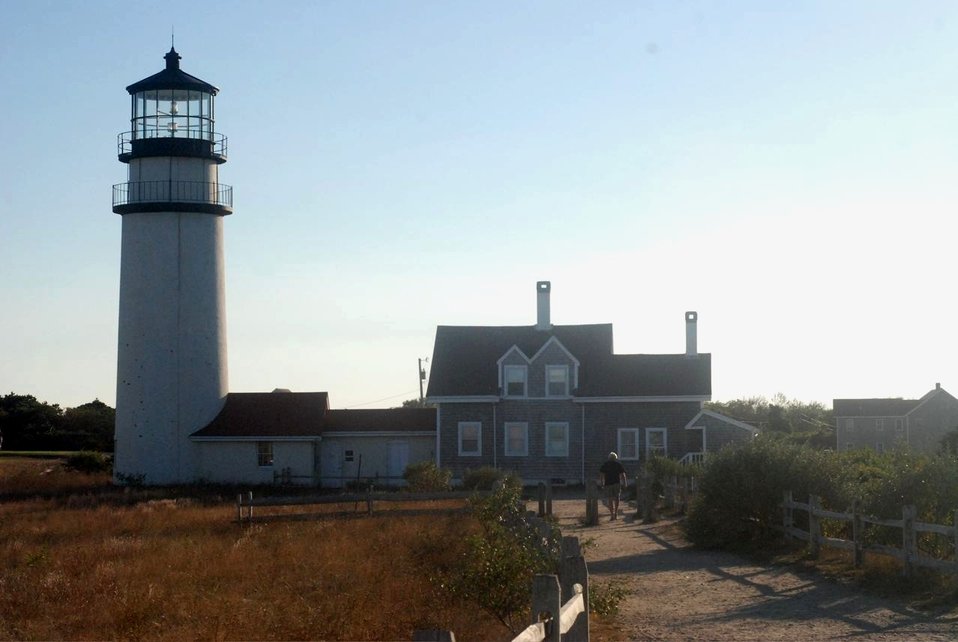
Highland Lighthouse in the late afternoon sun.